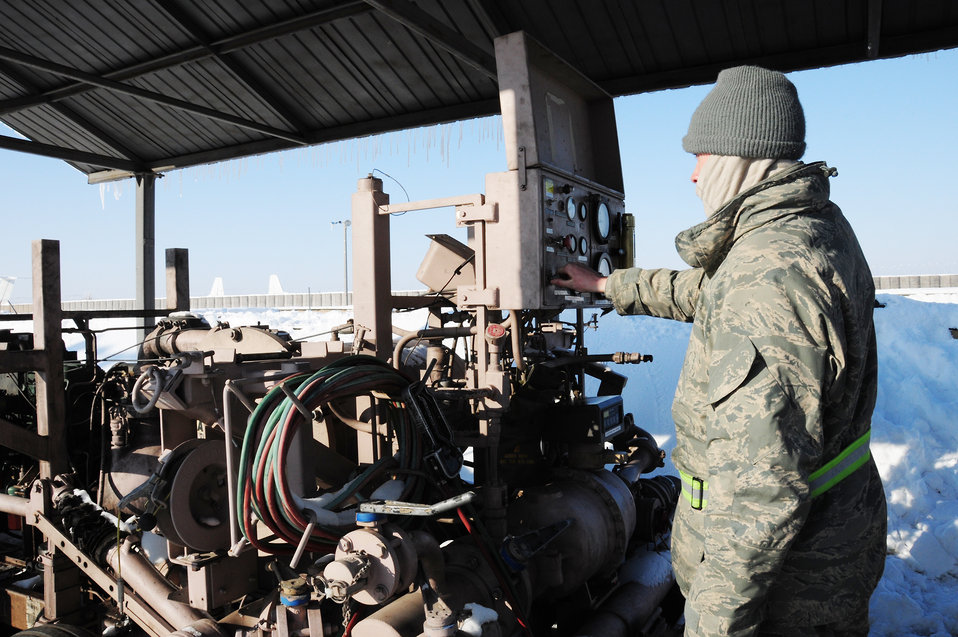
POL flight starts what could be 'benchmark' process

Airman 1st Class Justin Bell pumps jet fuel into a tank to be transported to the flightline Jan. 19, 2010, at the Transit Center at Manas Air Base, Kyrgyzstan. The POL flight here was the first in the area of responsibility to implement a new pre-filter system for fuel which will save time and money and deliver better, cleaner fuel to the aircraft the KC-135 Stratotanker refuels. Airman Bell is a 376th Expeditionary Logistics Readiness Squadron petroleum, oil and lubricants specialist.